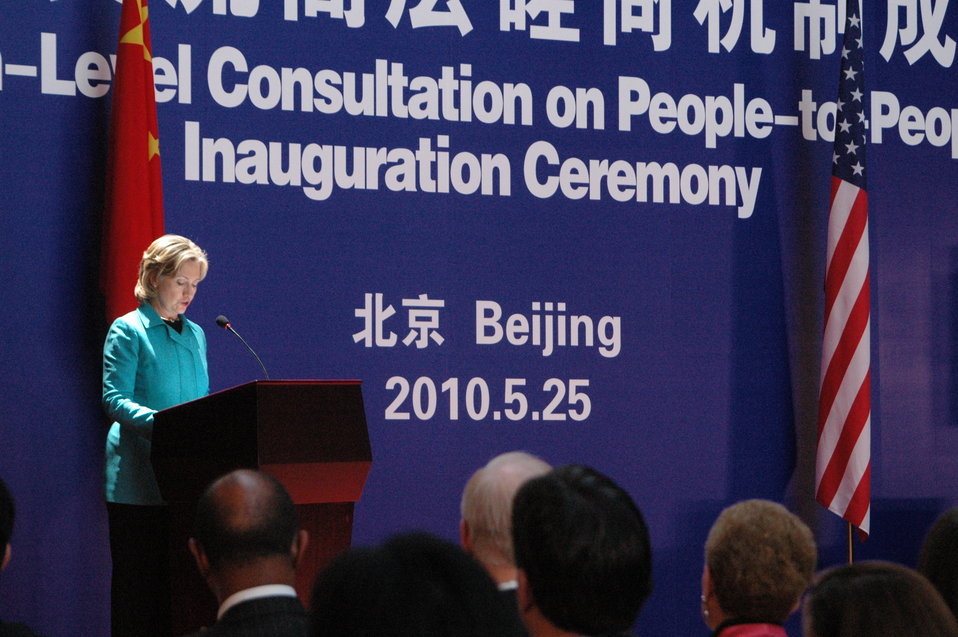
Secretary Clinton Delivers Remarks at the People-to-People Exchange Ceremony

U.S. Secretary of State Hillary Rodham Clinton delivers remarks at the U.S.-China Consultation on People-to-People Exchange ceremony at the National Center for the Performing Arts in Beijing, China, May 25, 2010.